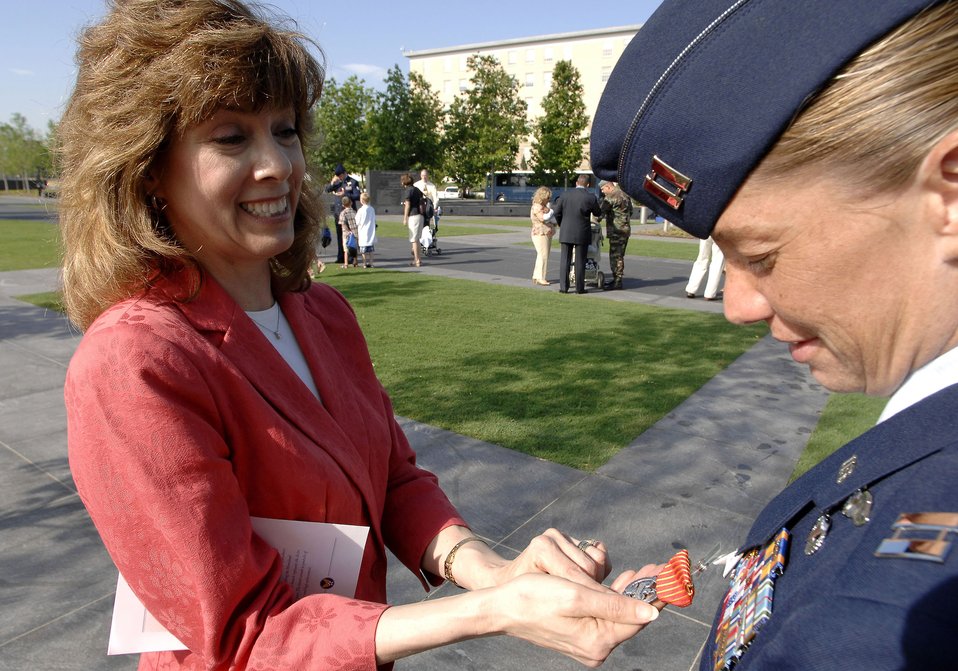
Modernizing an old design a challenge for medal makers

Susan Gamble, designer of the Air Force Combat Action Medal, looks at her work after one of the medals was pinned on Capt. Allison Black, 1st Special Operations Group, Hurlburt Field, Fla. The captain was one of the first six Airmen to receive the medal in a ceremony June 12 at the Air Force Memorial in Arlington, Va.